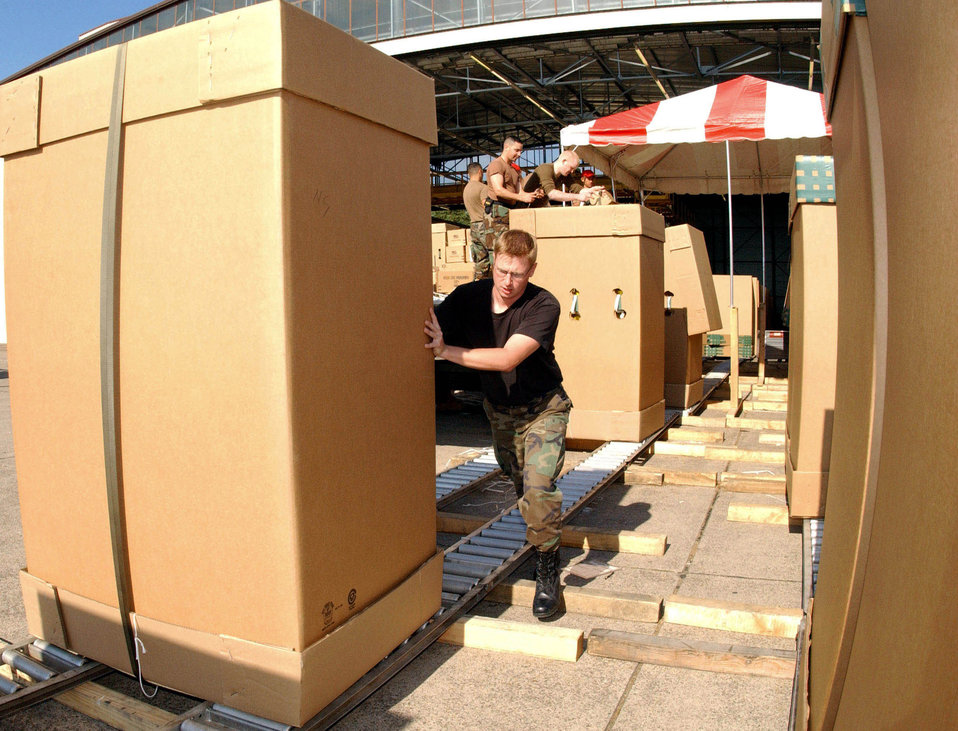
Humanitarian daily rations

RAMSTEIN AIR BASE, Germany -- Staff Sgt. Ricky Smith, 437th Aerial Port Squadron, Charleston Air Force Base, S.C., moves containers full of humanitarian daily rations Oct. The humanitarian aid was delivered to refugees in Afghanistan by C-17 Globemaster III transport planes. More than 37,000 humanitarian food packages were delivered to thousands of displaced Afghan refugees facing starvation.